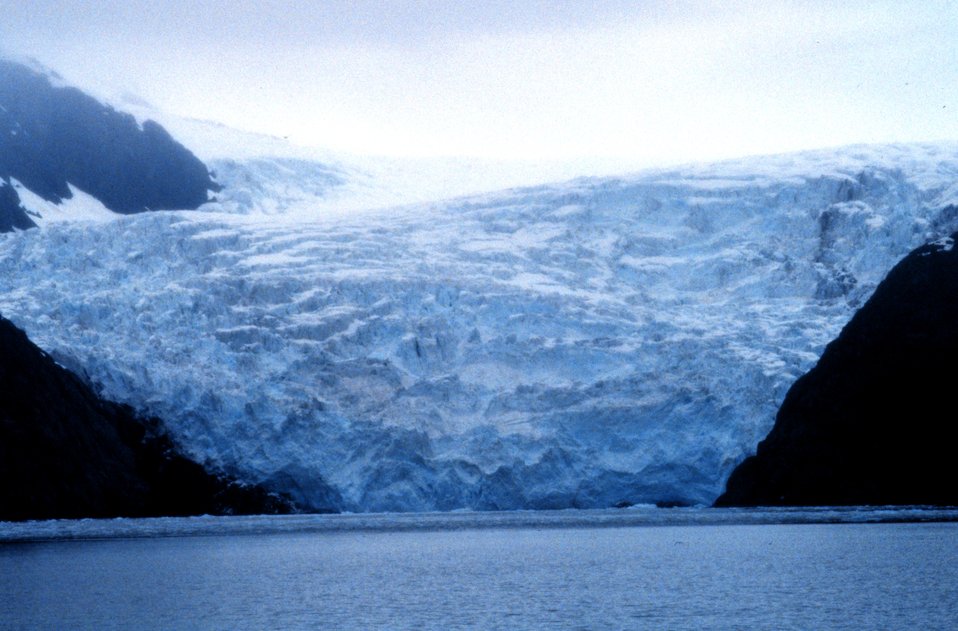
Holgate glacier in Kenai Fjords